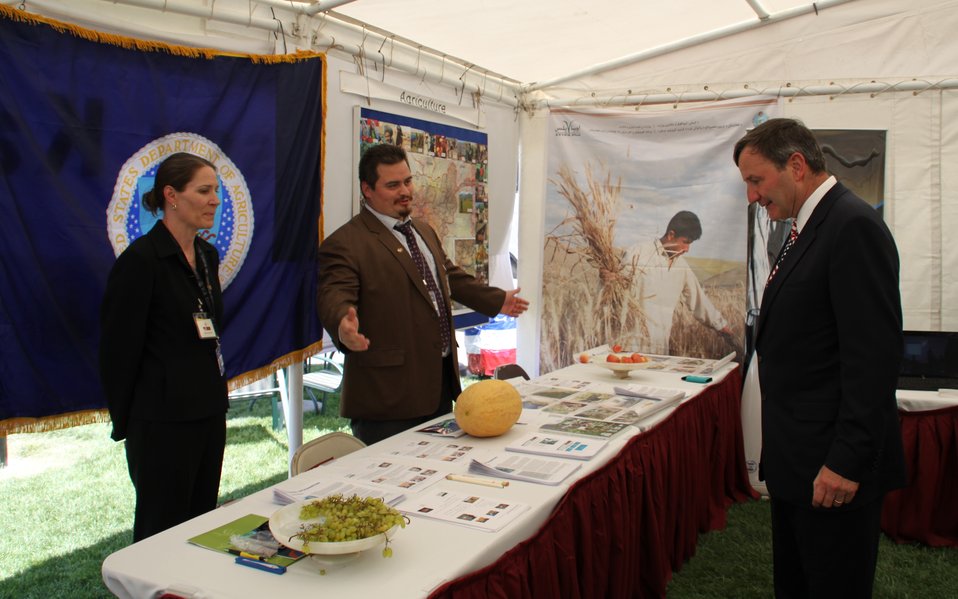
Kabul Official July 4th Celebration